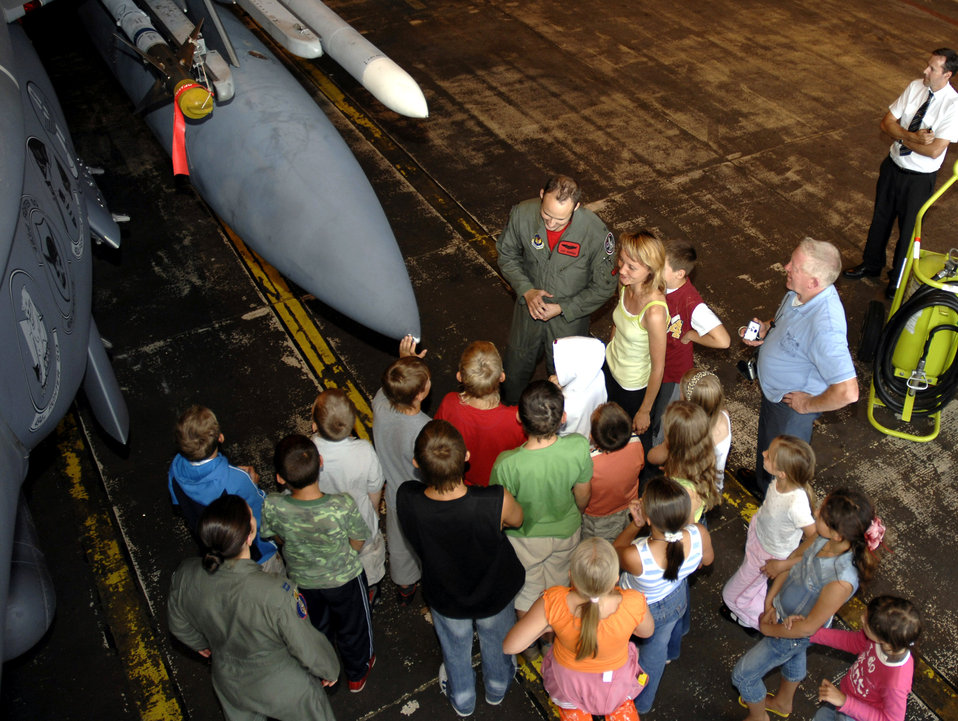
Chernobyl children's group visits RAF Lakenheath

More than 20 Belarusian children huddle around 1st Lt. Jacob Anderson, a 494th Fighter Squadron pilot, as he talks about the F-15E Strike Eagle at Royal Air Force Lakenheath, England. The children got to tour the base as part of their visit to the United Kingdom through a charity called the Chernobyl Children Lifeline. The charity was founded for the children of Belarus, which is a developing country that suffered most from the fall-out caused by the Chernobyl nuclear accident in 1986.